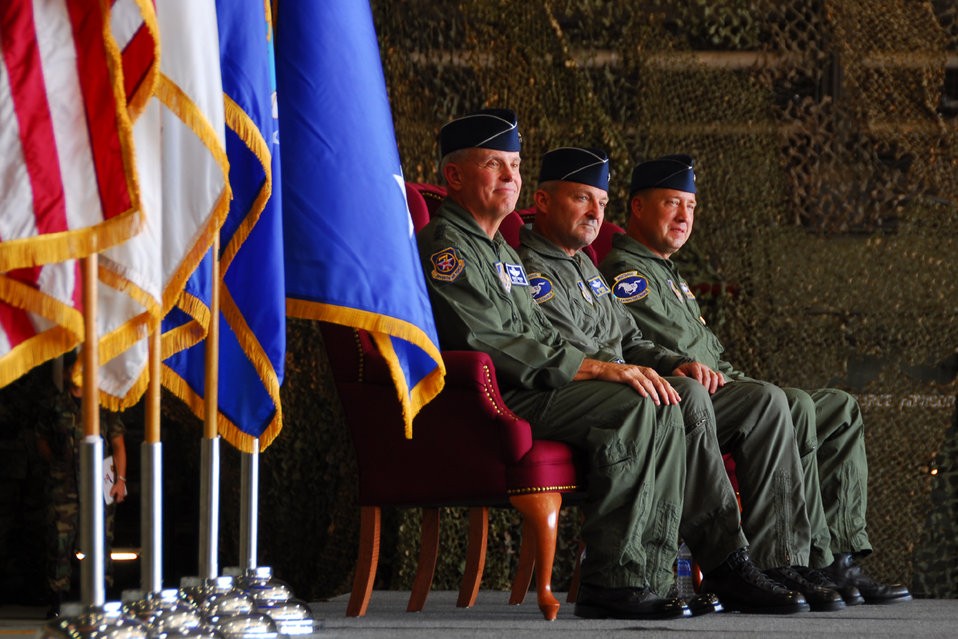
51st Fighter Wing change of command

Lt. Gen. Steven G. Wood, 7th Air Force commander; Brig. Gen. Joseph Reynes, former wing commander and Col. Jon Norman new wing commander, participate in the change of command ceremony June 15 at Osan Air Base, South Korea. General Reynes passed on command of the 51st Fighter Wing to Colonel Norman.